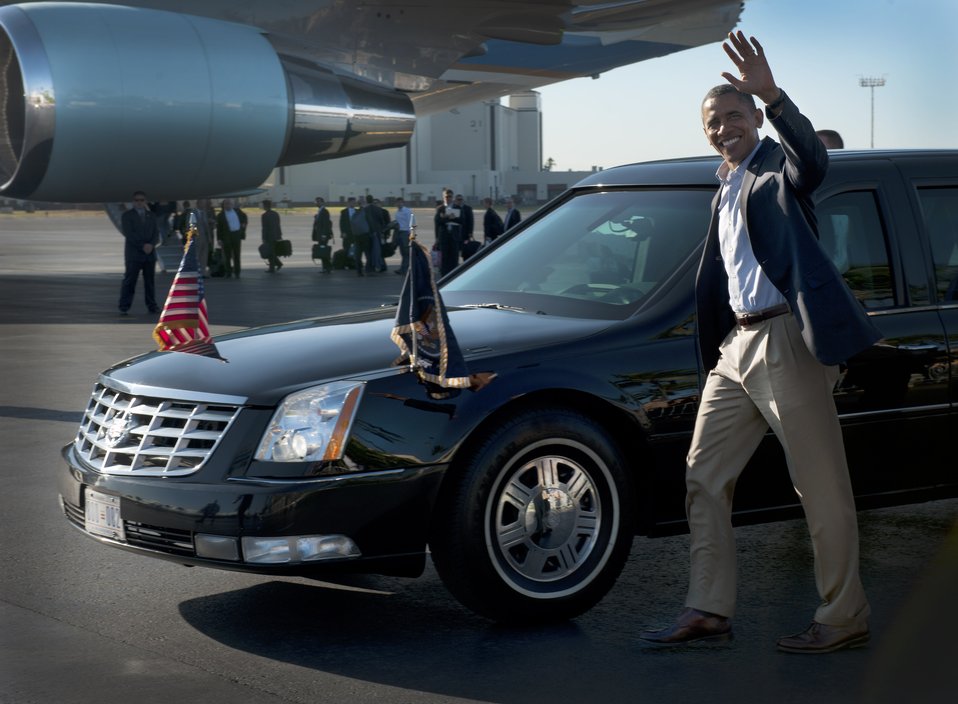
President Obama meets with Hickam Airmen

President Barack Obama waves goodbye to Airmen and local media as he prepares to depart Joint Base Pearl Harbor-Hickam, Hawaii, following the Asia-Pacific Economic Cooperation conference in Honolulu on Nov. 15, 2011. President Obama met with military members and base leaders prior to his departure.